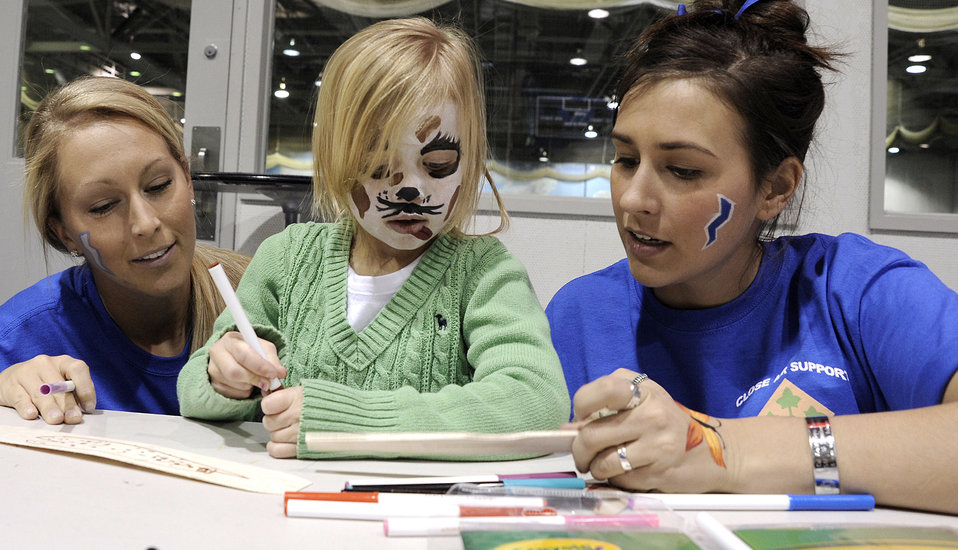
LIFT program

Cadet 3rd Class Layne Harrod (left) and Cadet 2nd Class Chelsaa Ragland help Oakley Gardner build a balsa glider during a Leaders in Flight Training outing at the U.S. Air Force Academy Jan. 22, 2011, in Colorado Springs, Colo. Oakley is the daughter of Army Staff Sgt. Erich Gardner, who is stationed at Fort Carson, Colo.